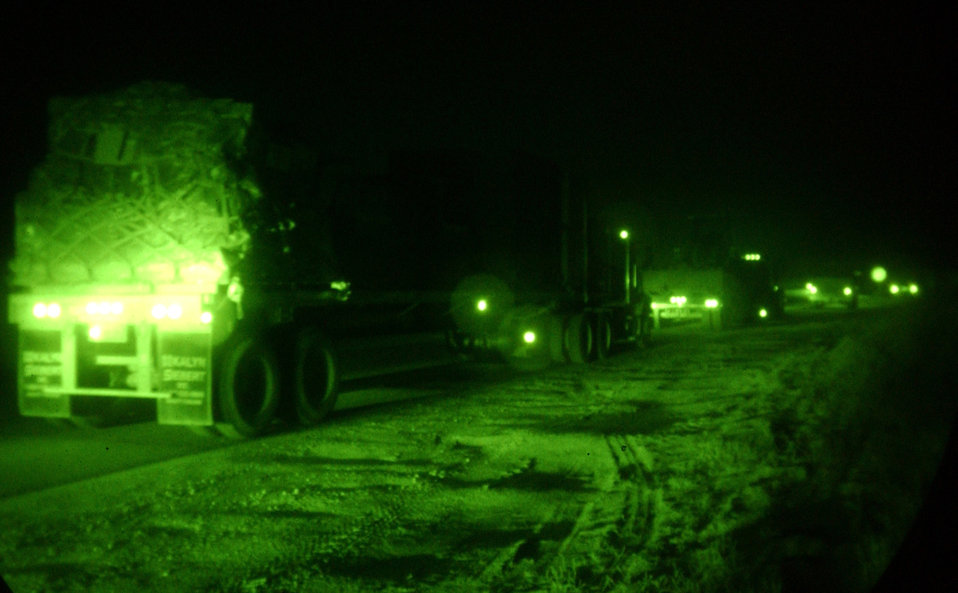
Convoy

OPERATION IRAQI FREEDOM -- A convoy team from the 332nd Air Expeditionary Wing departs a forward-deployed location and heads for Iraq on Mar. 26. The team is resupplying troops fighting in Operation Iraqi Freedom.